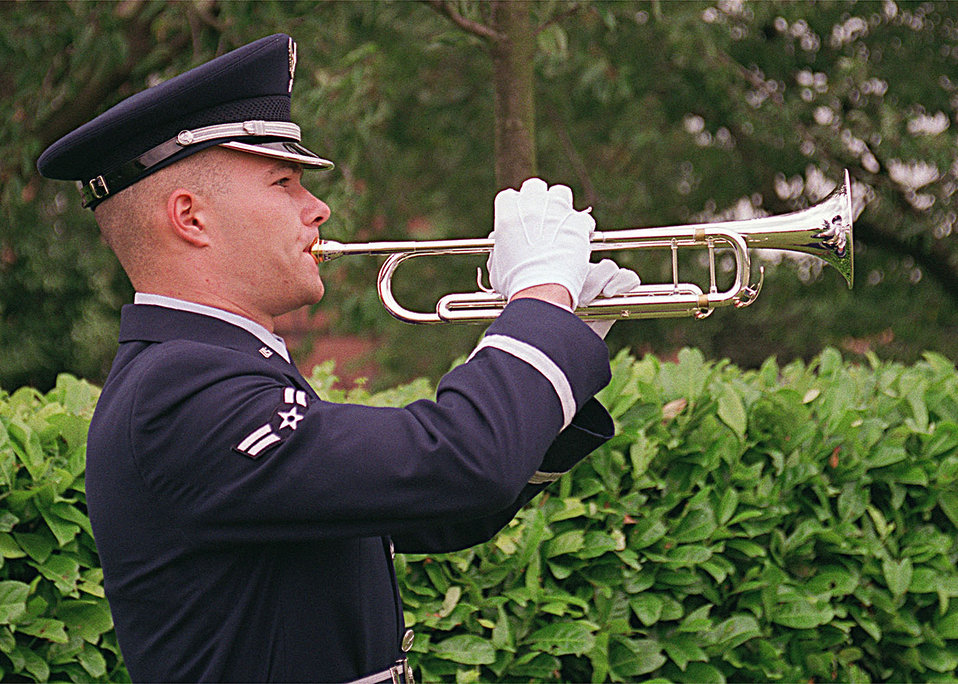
Sound Taps

ROYAL AIR FORCE LAKENHEATH, England -- Airman 1st Class Jaime Wojcik, from the 48th Component Repair Squadron here, performs Taps during the Battle of Britain ceremony at the Battle of Britain Memorial Park June 24, 2000. This is the 29th annual and final gathering of pilots who took part in the aerial battle with the Germans.